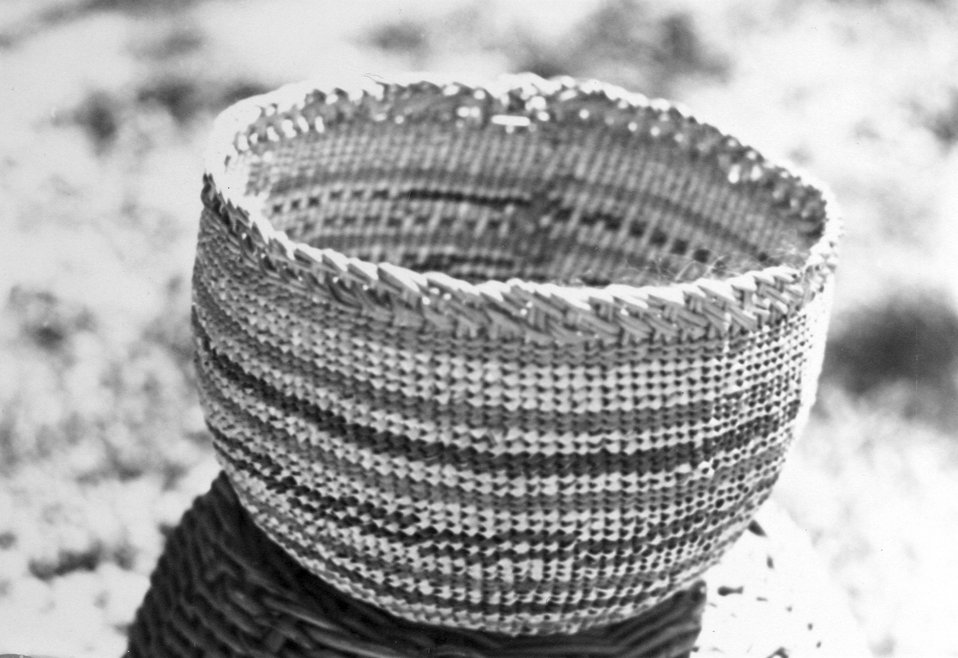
A basket made by Adeline Billings.